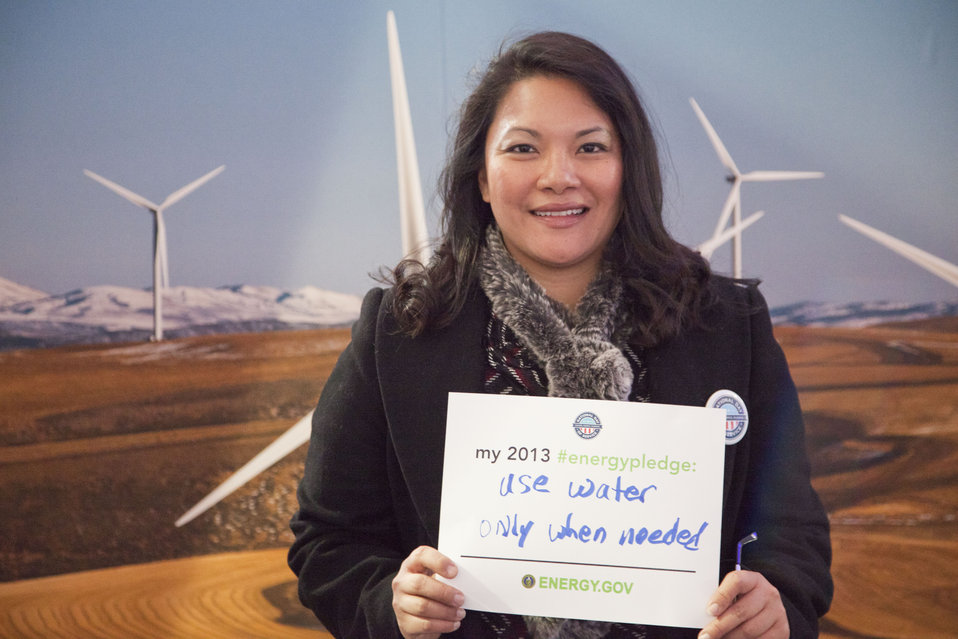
What's your #energypledge?